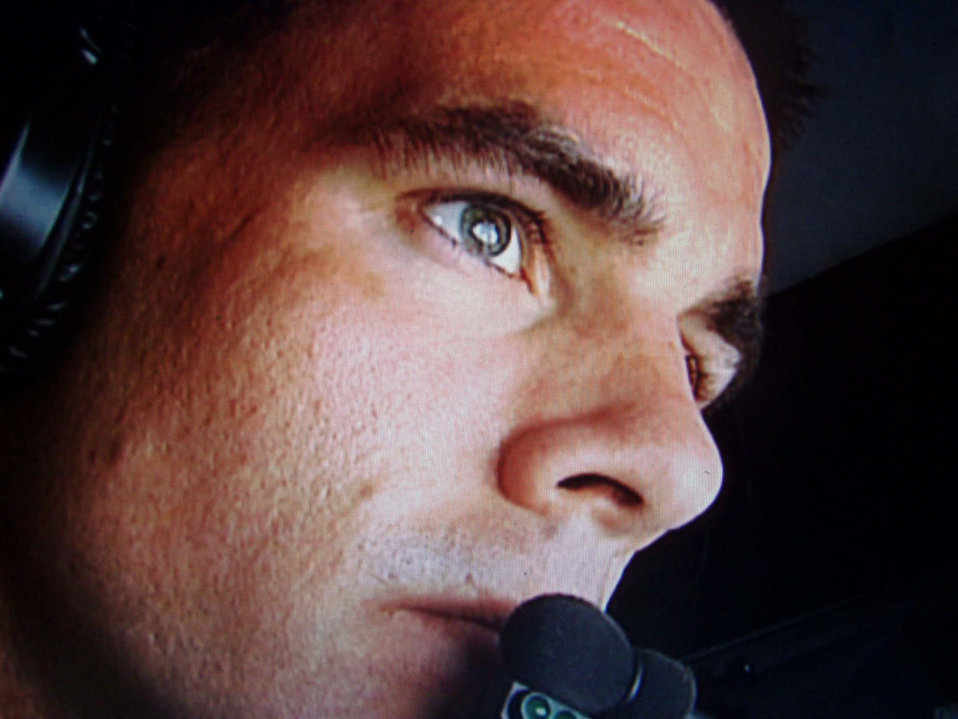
Deployed Airman keeps aircraft aloft

SOUTHWEST ASIA -- Airman 1st Class Tyler Parsons is a KC-135 Stratotanker boom operator with the 340th Expeditionary Air Refueling Squadron. He is deployed from Grand Forks Air Force Base, N.D.